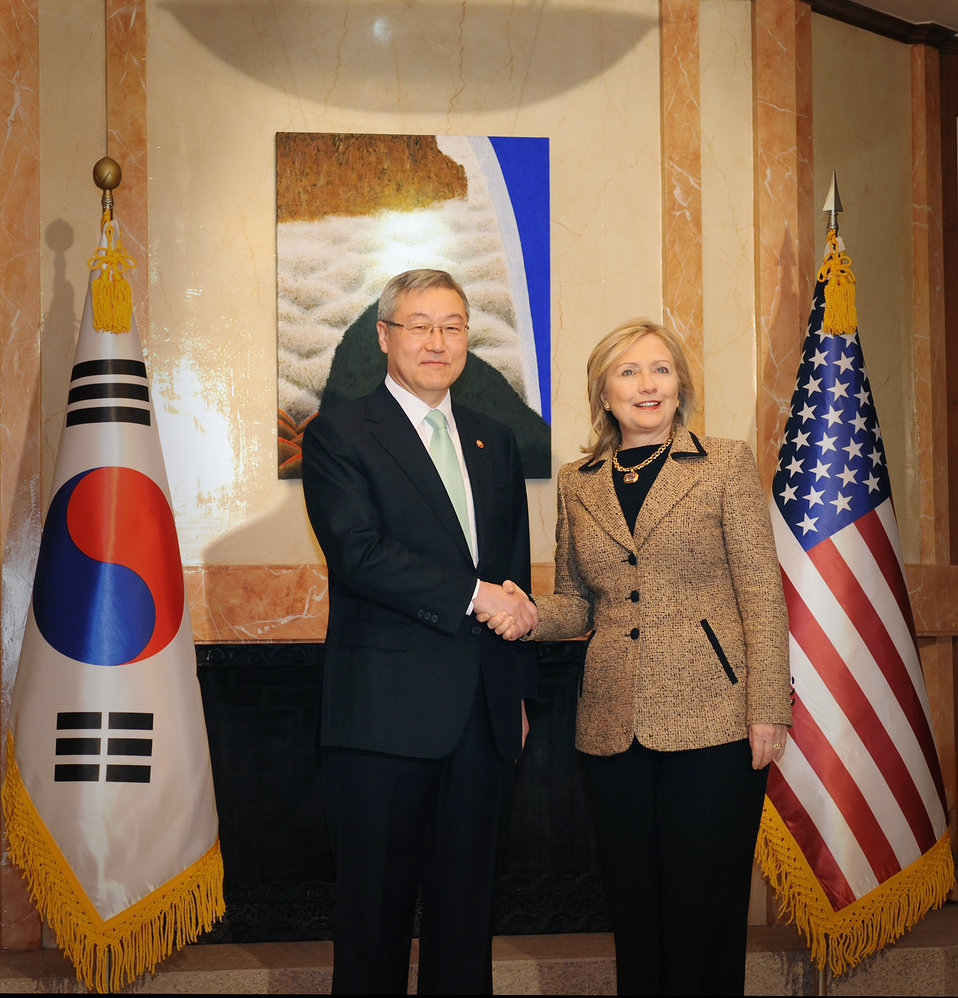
Secretary Clinton Is Greeted By Republic of Korea Foreign Minister Kim Sung-hwan

U.S. Secretary of State Hillary Rodham Clinton is greeted by Republic of Korea Foreign Minister Kim Sung-hwan at his residence in Seoul, South Korea, on April 16, 2011.